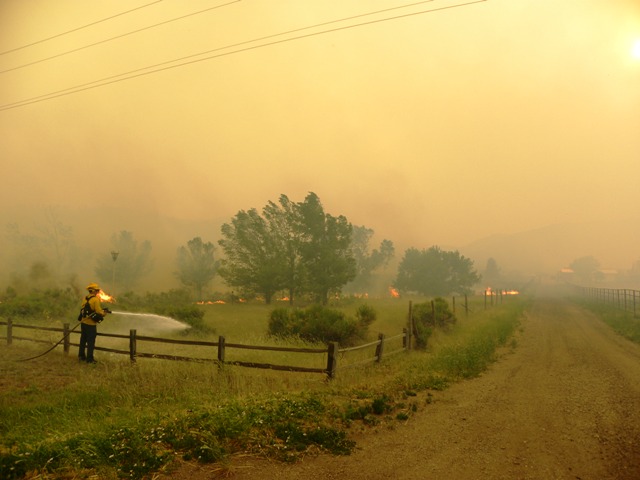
Firefighter wets down area in front of private home in effort to retard the advance of the High Park Wildfire on the Arapaho and Roosevelt National Forests and Pawnee National Grassland on Thursday, June 10, 2012. The High Park Wildfire located approximately 15 miles west of Fort Collins, CO has consumed over 65,738 acres of forest and grassland with approximately 189 homes destroyed. Over 1,773 personnel from the U.S. Forest Service (FS), state and local resources are fighting the wildfire and have achieved 55% containment as of June 20, 2012. The High Park Wildfire began on June 9. 2012 because of a lightening strike on private land.